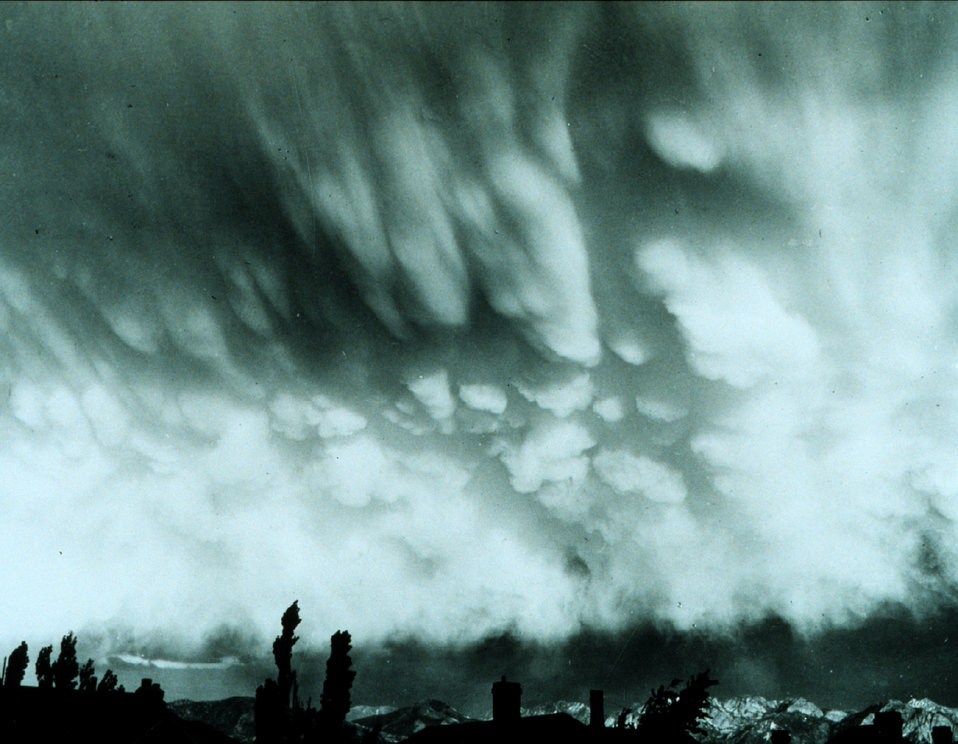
Mammatocumulus - often associated with tornado development